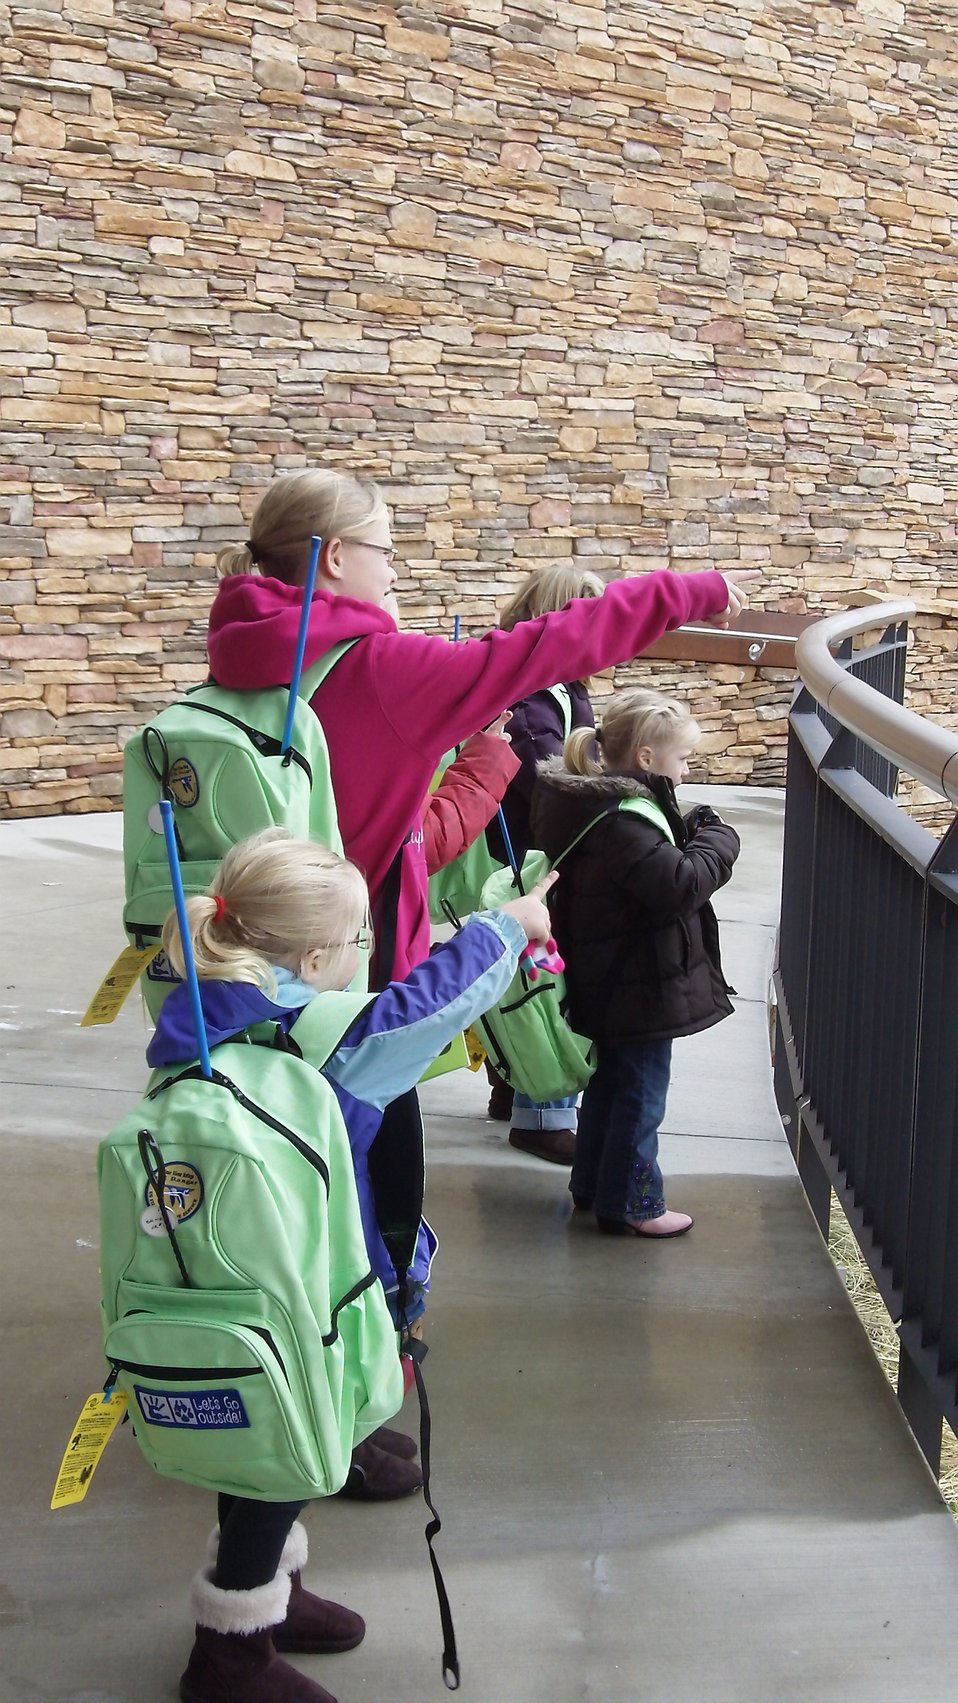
Bear River Migratory Bird Refuge

The girls can't wait to get outside and use their new Jr. Ranger Activity backpacks! The packs are filled with fun stuff for children and families to use while exploring the Refuge trails and wetlands. There are field guides for birds, bugs and more. An Activity workbook with great lessons and games on animal tracking, bird and bug identification, weather watching and the water cycle. The learning and exploring is fun AND educational and once the youngster has completed the activities, they earn a US Fish & Wildlife Service Jr. Ranger patch! Give it a try and get out there and EXPLORE!